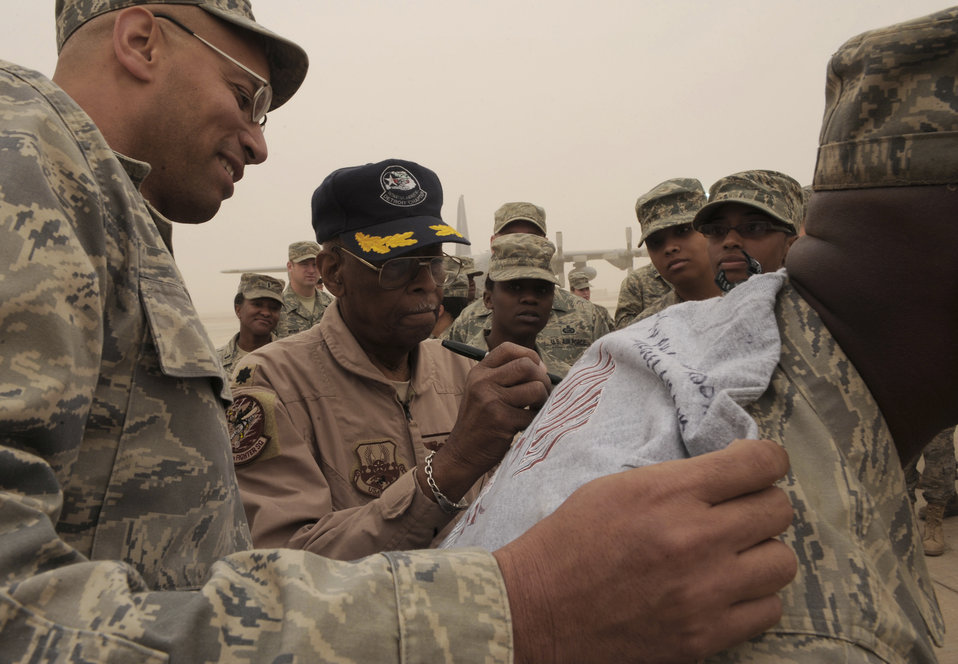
Tuskegee Airmen ... the legacy continues

Retired Lt. Col. Alexander Jefferson, a Tuskegee Airman, signs a shirt and speaks with Airmen April 24 at Joint Base Balad, Iraq. Four Tuskegee Airmen met with Airmen here assigned to the 332nd Air Expeditionary Wing during a three-day visit.